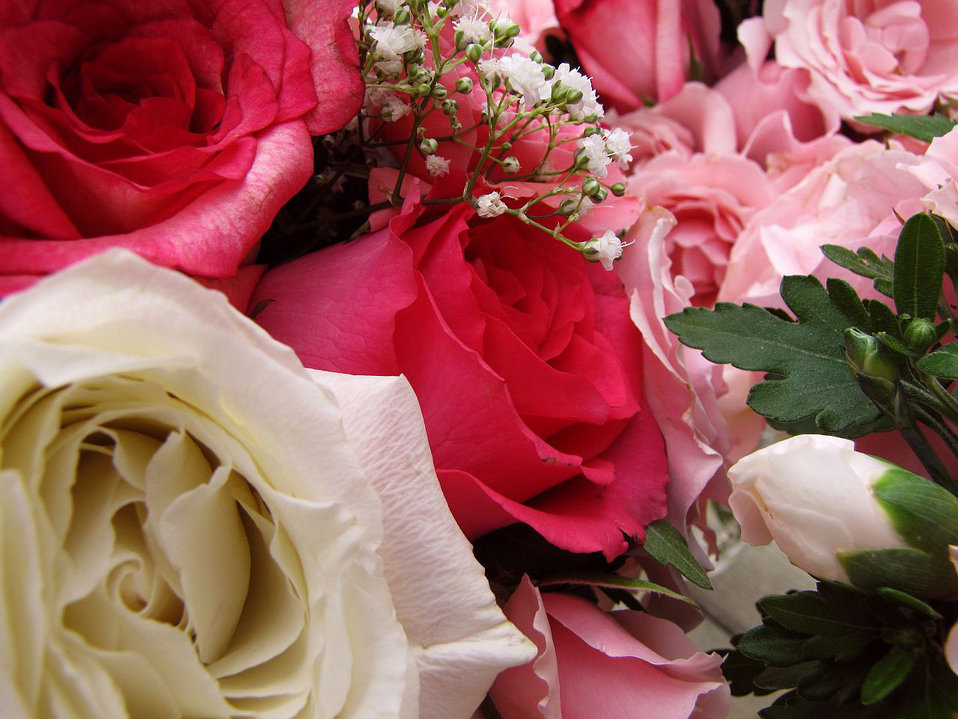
Roses

Rose bouquet.